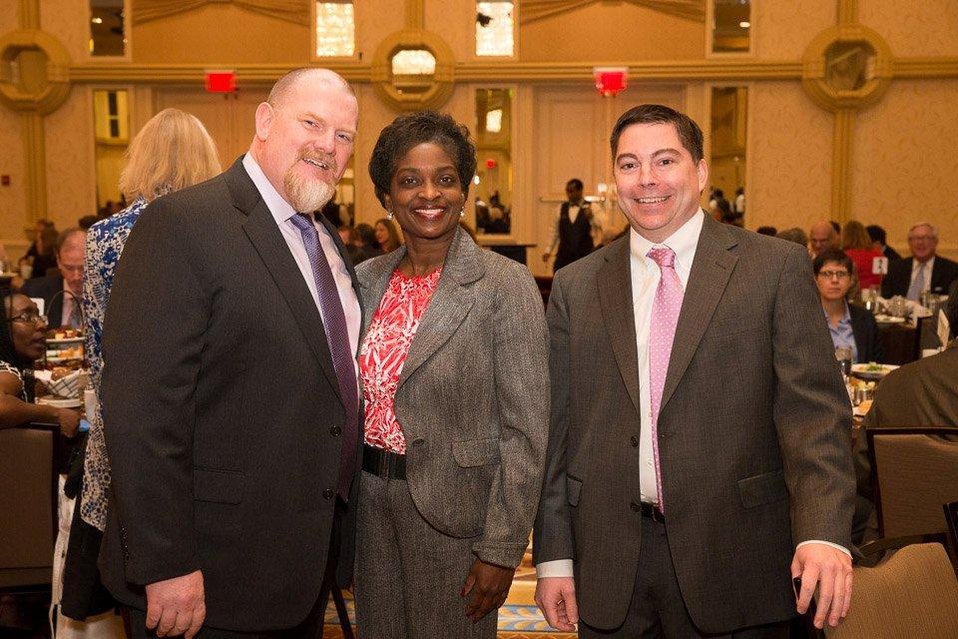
4.1.2014 FCBA Luncheon

Joe Di Scipio, FCBA President; FCC Commissioner Mignon Clyburn; FCC Commissioner Mike O’Rielly
Federal Communications Bar Association Luncheon, 4/1/14
Photo by Mark Van Bergh, courtesy of FCBA